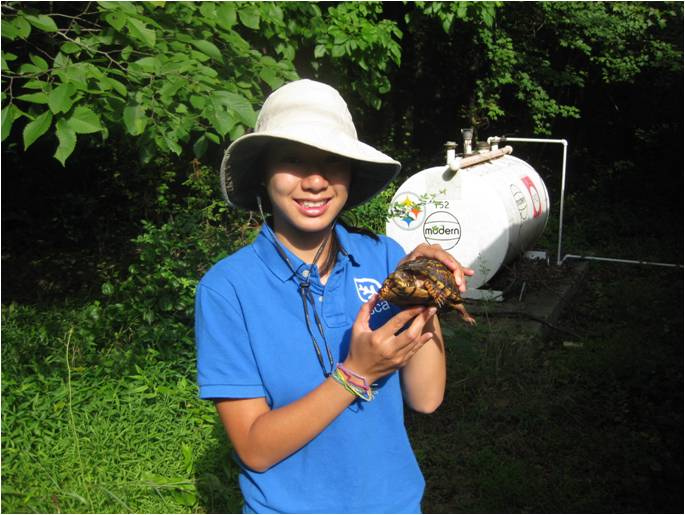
SCA intern at Patuxent Research Refuge

U.S. Fish and Wildlife Service